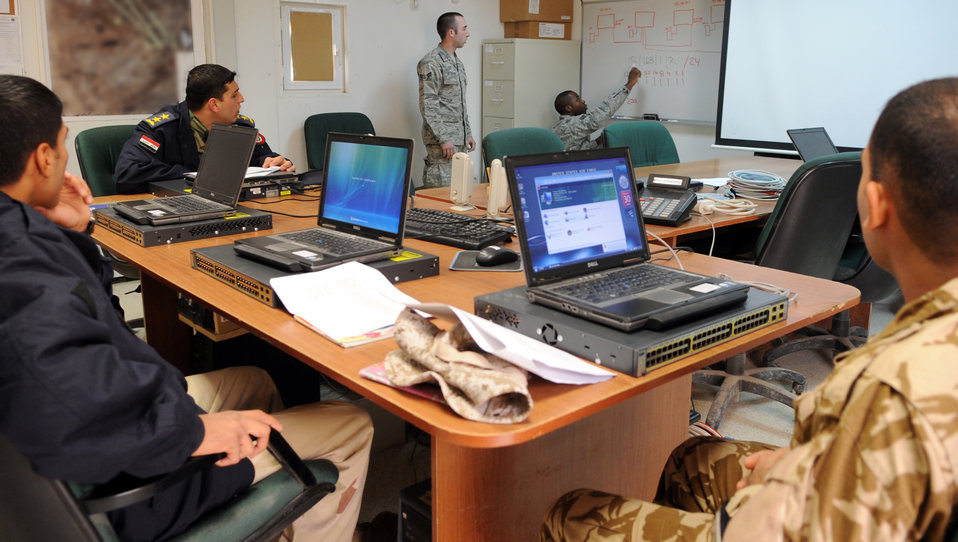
Airmen teach Iraqi counterparts networking skills

Four Iraqi air force members learn communication techniques from Senior Airman Andre Taylor and Airman 1st Class Chris Redman Jan. 30, 2010, at Kirkuk Air Base, Iraq. Airmen Taylor and Redman are from the 506th Expeditionary Communications Squadron.